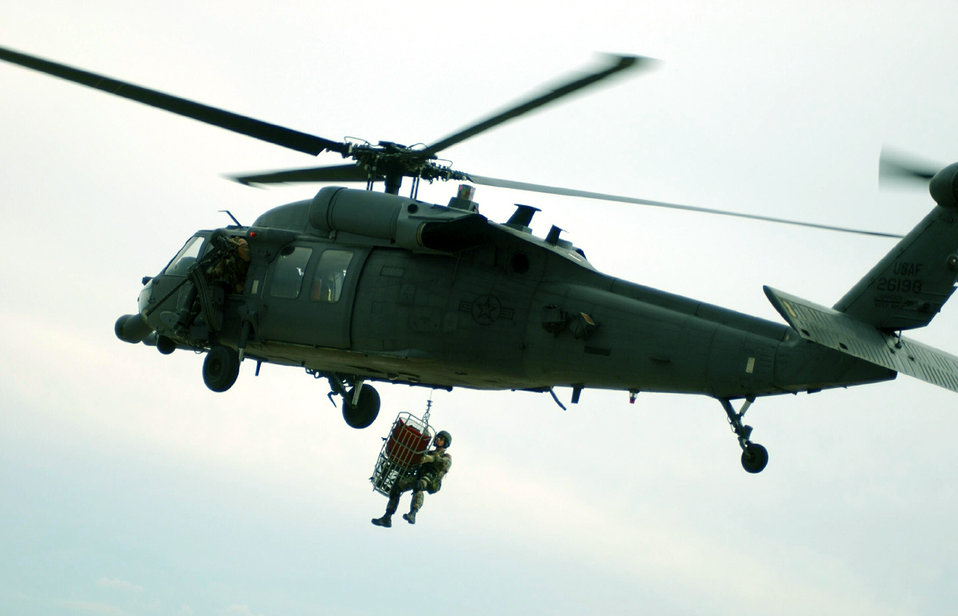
Rescue me!

DAVIS-MONTHAN AIR FORCE BASE, Ariz. -- A pararescueman from the 48th Rescue Squadron escorts a